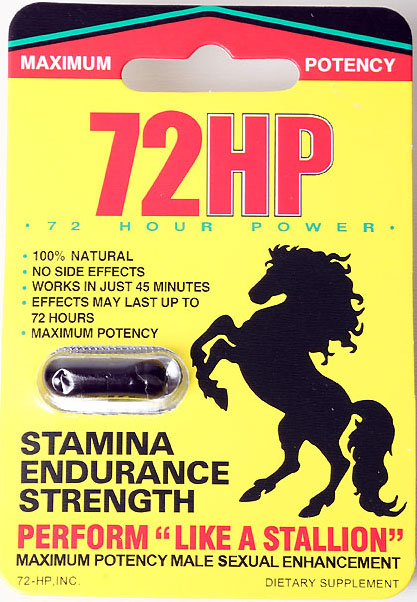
RECALLED – Dietary Supplement

August 27, 2013 – Product Recall – Hardmenstore.com Issues Voluntary Nationwide Recall of 72HP, Evil Root and Pro Power Max Due to Undeclared Sildenafil.